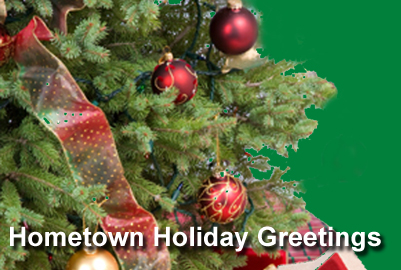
Servicemembers' Holiday Greetings now available online

Members of the Joint Hometown News Service in San Antonio have posted more than 8,000 holiday greetings from servicemembers and their families stationed overseas onto their Web site.